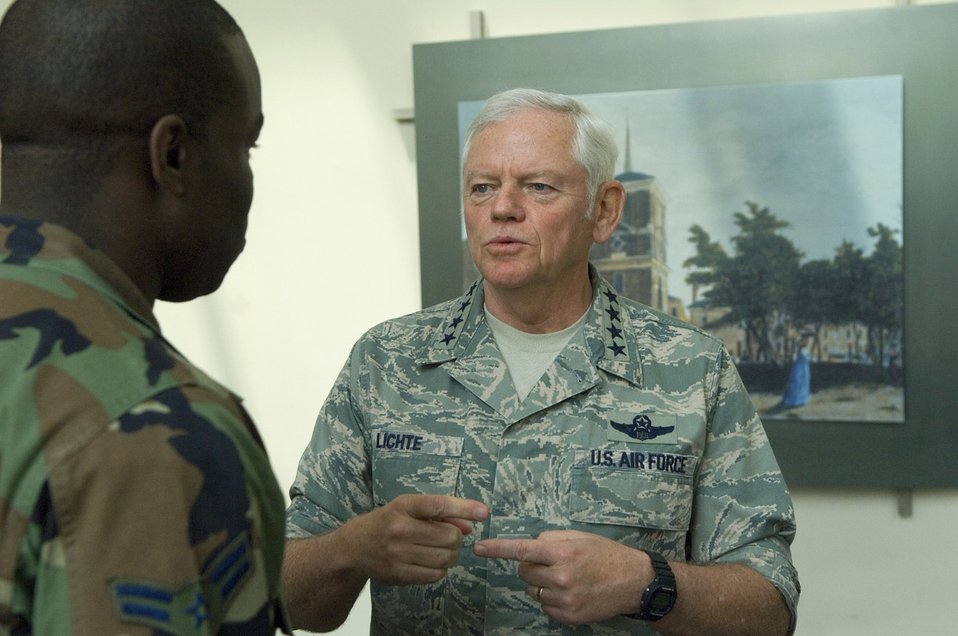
Airmen trace roots of independence during Air Force Week in Philadelphia

Gen. Arthur J. Lichte, Air Mobility Command commander, speaks with Airmen after a luncheon during Air Force Day at Independence Hall in Philadelphia, May 27, in conjunction with Air Force Week - Philadelphia. The week is designed to broaden awareness of the U.S. Air Force's role in the war on terrorism and strengthen support for Airmen serving worldwide in defense of freedom.